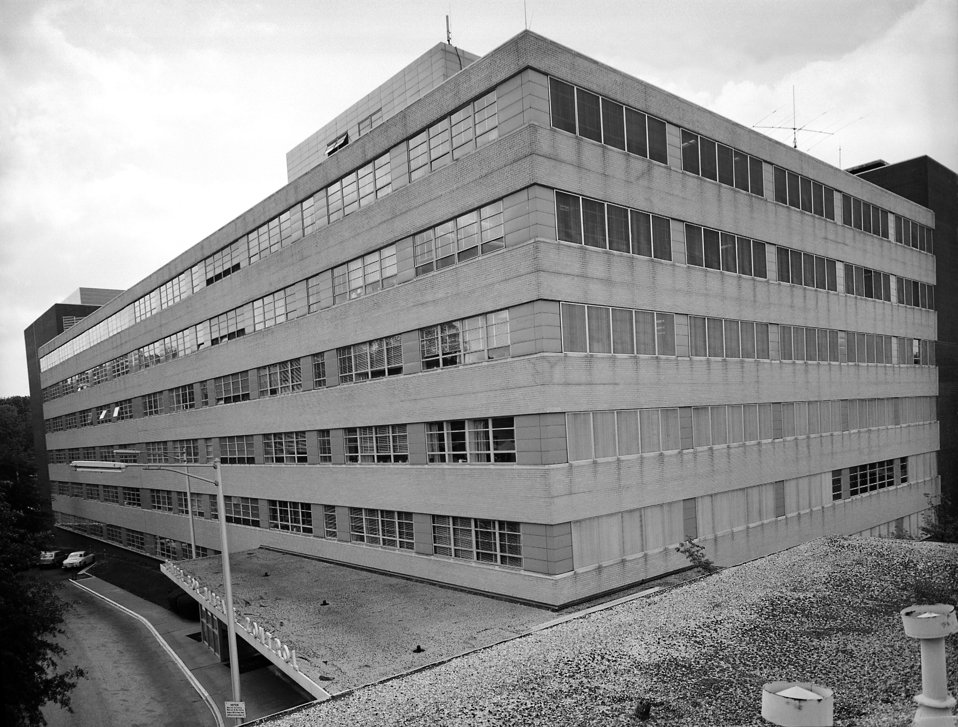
An oblique view of Centers for Disease Control and Prevention Build 1, Clifton Road Offices, Atlanta, GA.